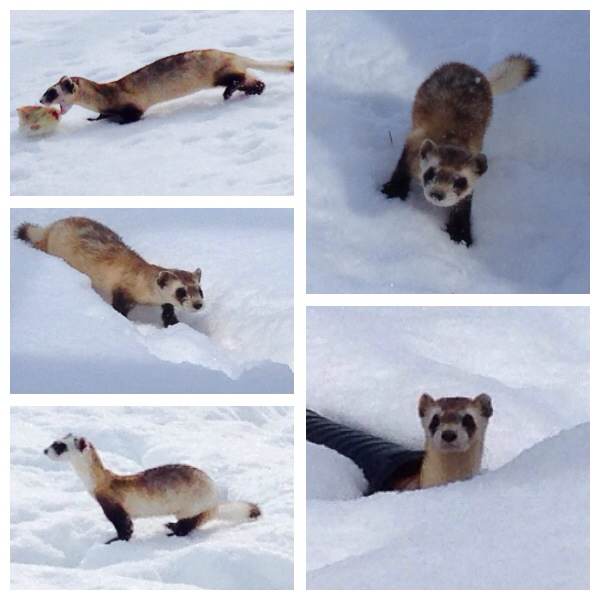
Black-footed Ferret